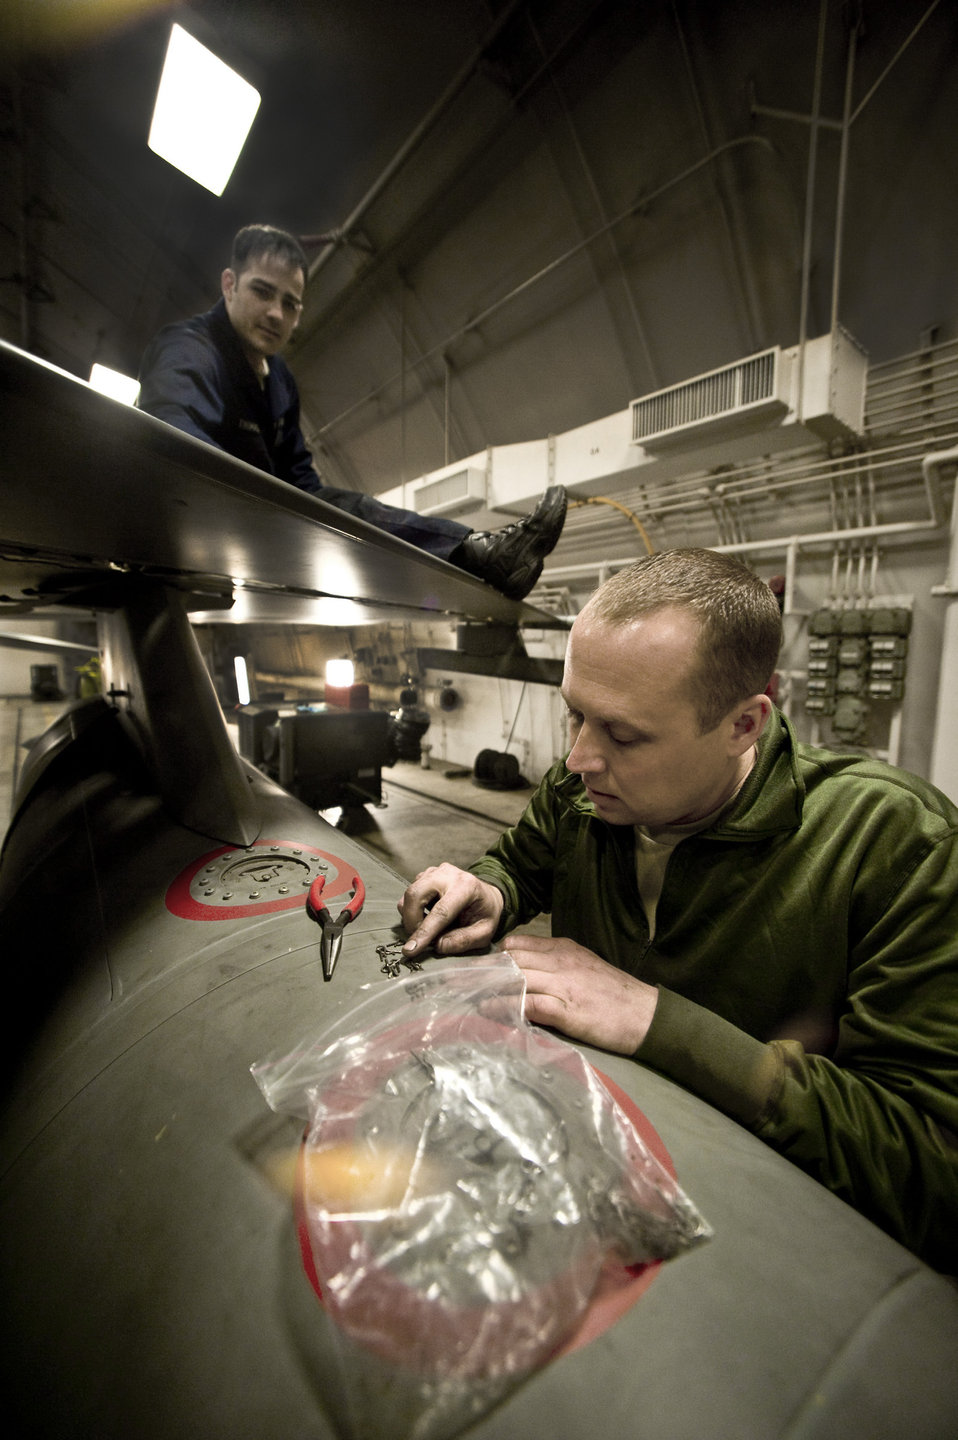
National Guard Airmen augment Misawa maintenance

Technical Sgt. Nathan Bechdolt grabs a safety clip to repair the leading edge flap of an F-16 Fighting Falcon as Staff Sgt. William Thomas works on the wing March 6 at Misawa Air Base, Japan. Sergeant Bechdolt is an F-16 crew chief deployed from the Air National Guard's 122nd Fighter Wing from Fort Wayne, Ind. Sergeant Thomas is a 14th Aircraft Maintenance Unit crew chief.